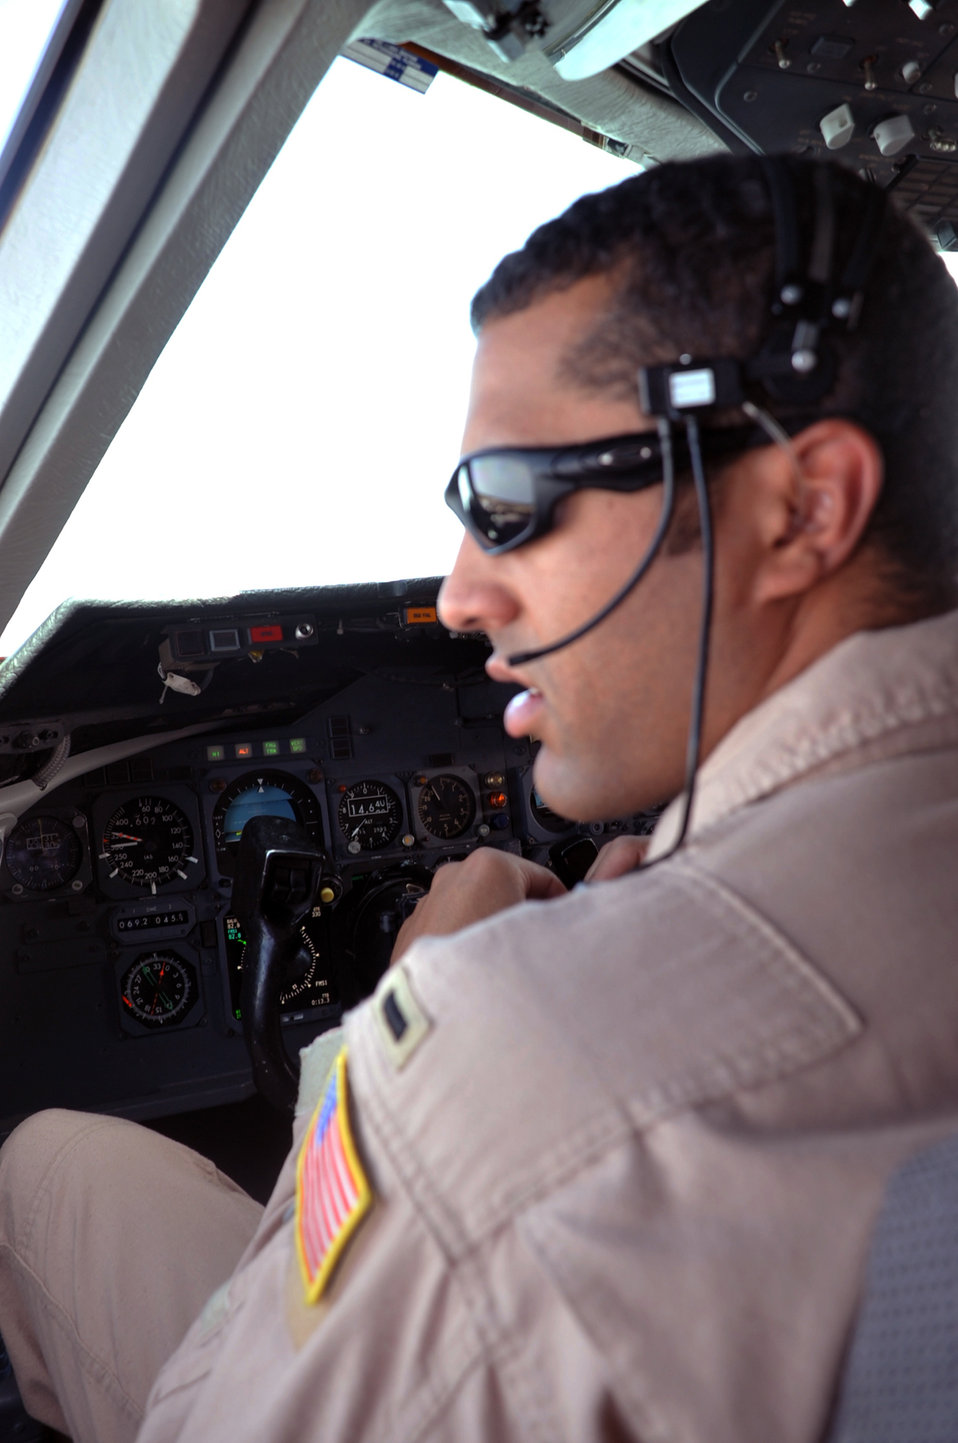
KC-10 pilot

1st Lt. Jason Brown flies a KC-10 Extender on an air refueling mission April 24, 2010, in Southwest Asia. KC-10 Extender tanker pilot with the 908th Expeditionary Air Refueling Squadron, Lieutenant Brown is a KC-10 pilot deployed from the 305th Air Mobility Wing, Joint Base McGuire-Dix-Lakehurst, N.J., and his hometown is Arvada, Colo.